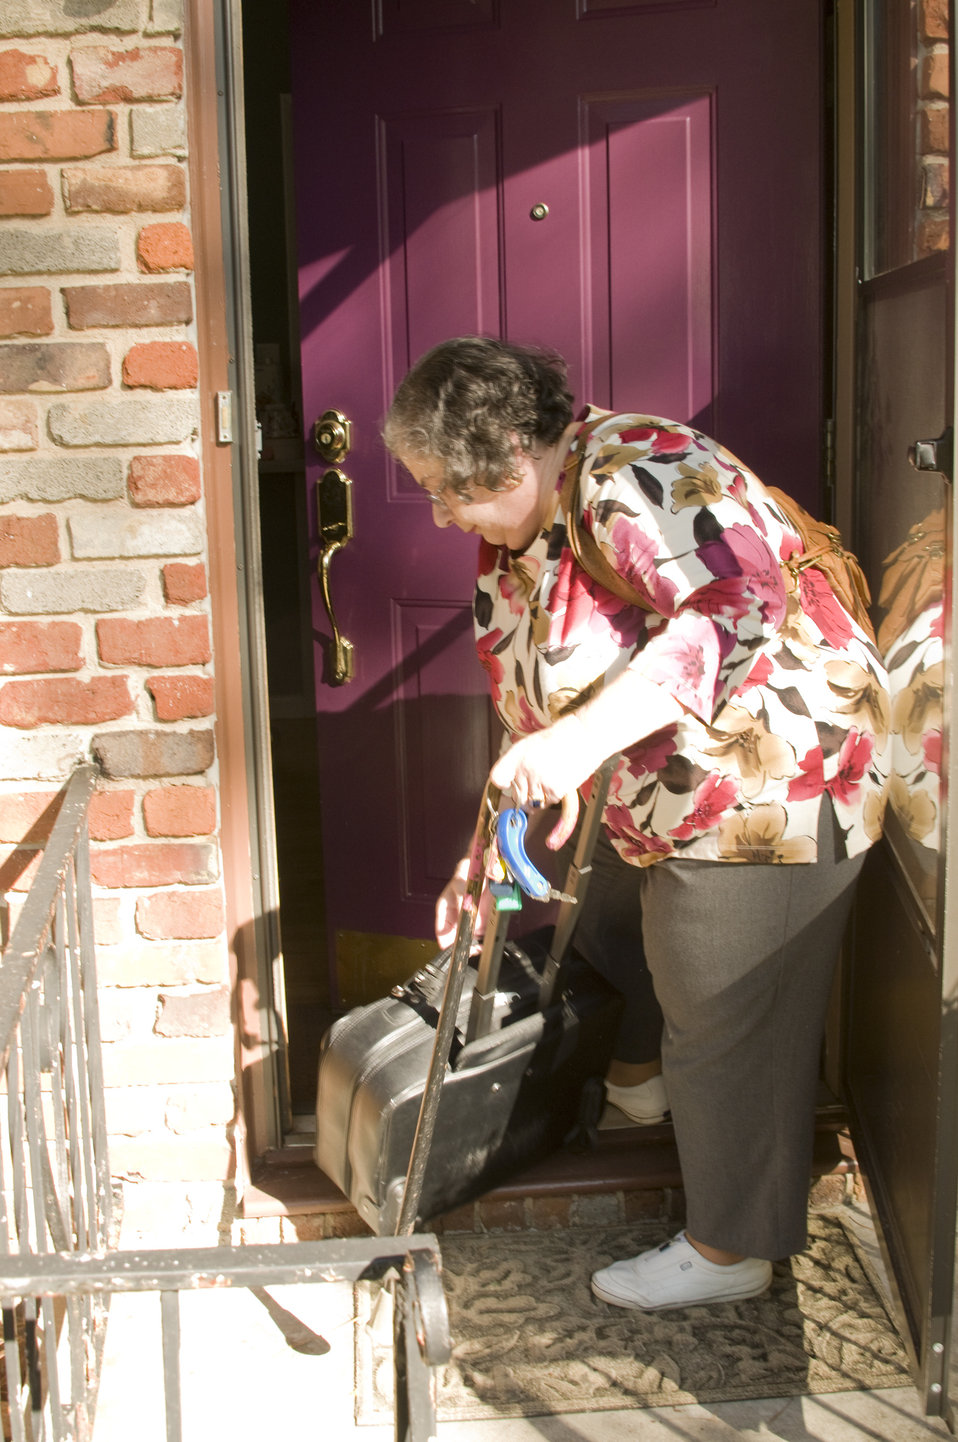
The woman pictured here is a rheumatoid arthritis patient, and was not letting her painful condition impeded her from daily activities, which included the use of a baggage carrier that she was using to move a small piece of luggage over the threshold of her front door.